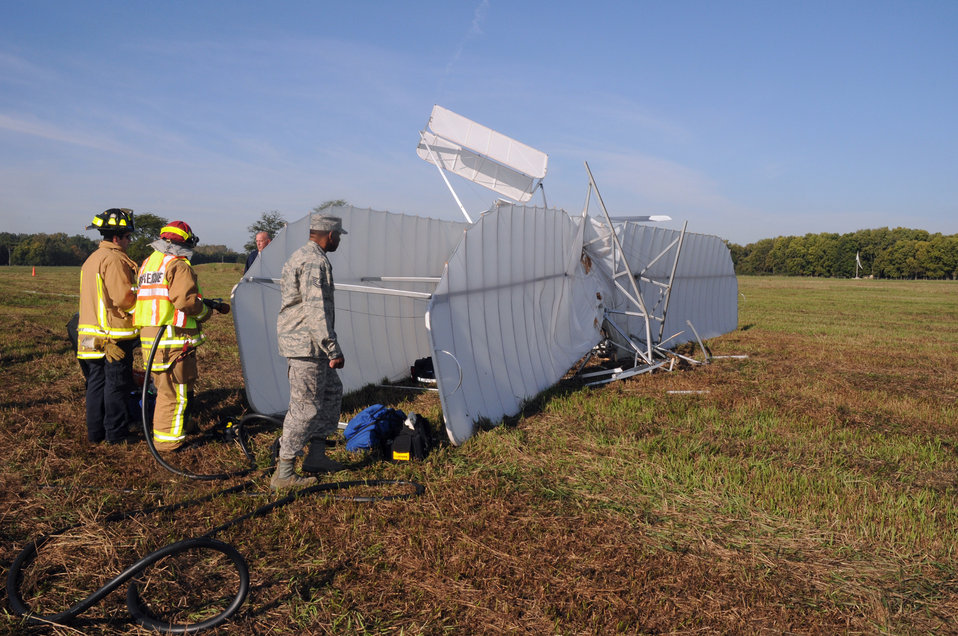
Wright Flyer replica crashes

Air Force crash rescue and safety personnel inspect the wreckage of a replica 1905 Wright Flyer III that crashed Oct. 1, 2009 on Huffman Prairie Flying Field at Wright-Patterson Air Force Base, Ohio. Pilot and vintage aircraft builder Mark Dusenberry of Dennison, Ohio, was injured during the practice flight in preparation to celebrate the 104th Anniversary of Practical Flight.